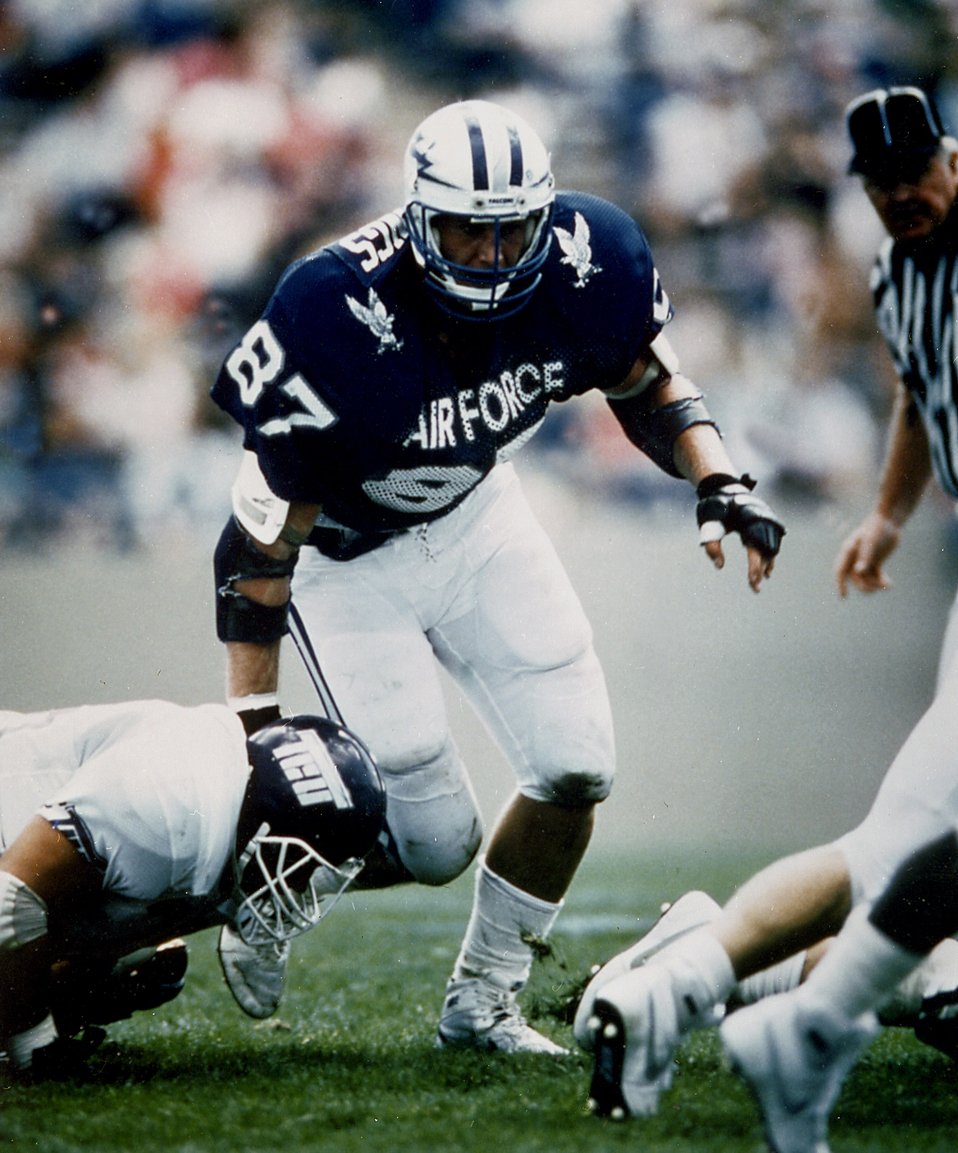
Football: Hennings inducted into college hall of fame

U.S. Air Force Academy defensive lineman Chad Hennings is shown during a Western Athletic Conference game against Texas Christian University at Falcon Stadium in 1987. Hennings was inducted into the College Football Hall of Fame Dec. 5 in New York City.